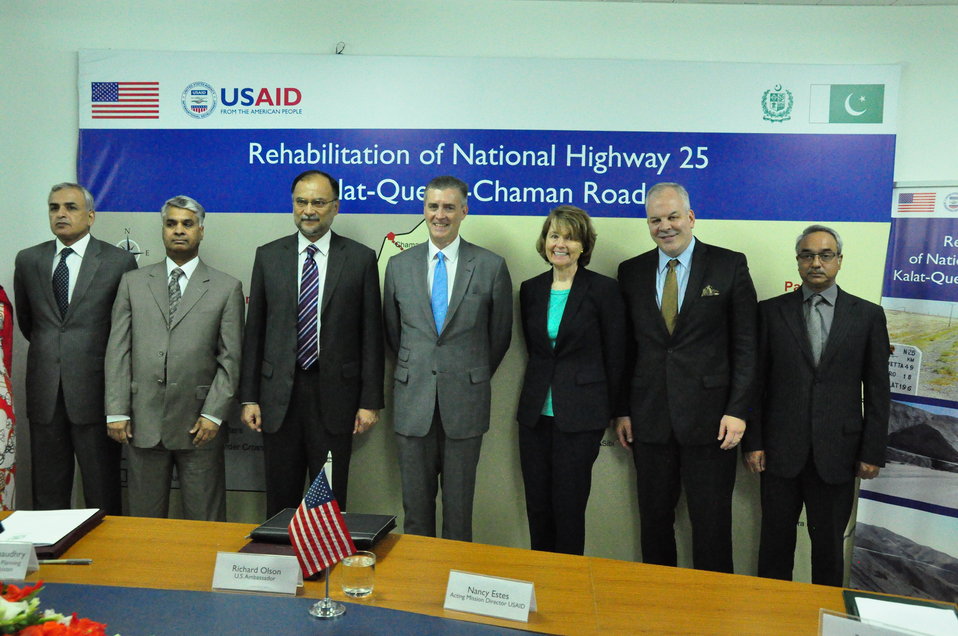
The United States and National Highway Authority Sign Agreement to Rehabilitate Kalat-Quetta-Chaman Highway